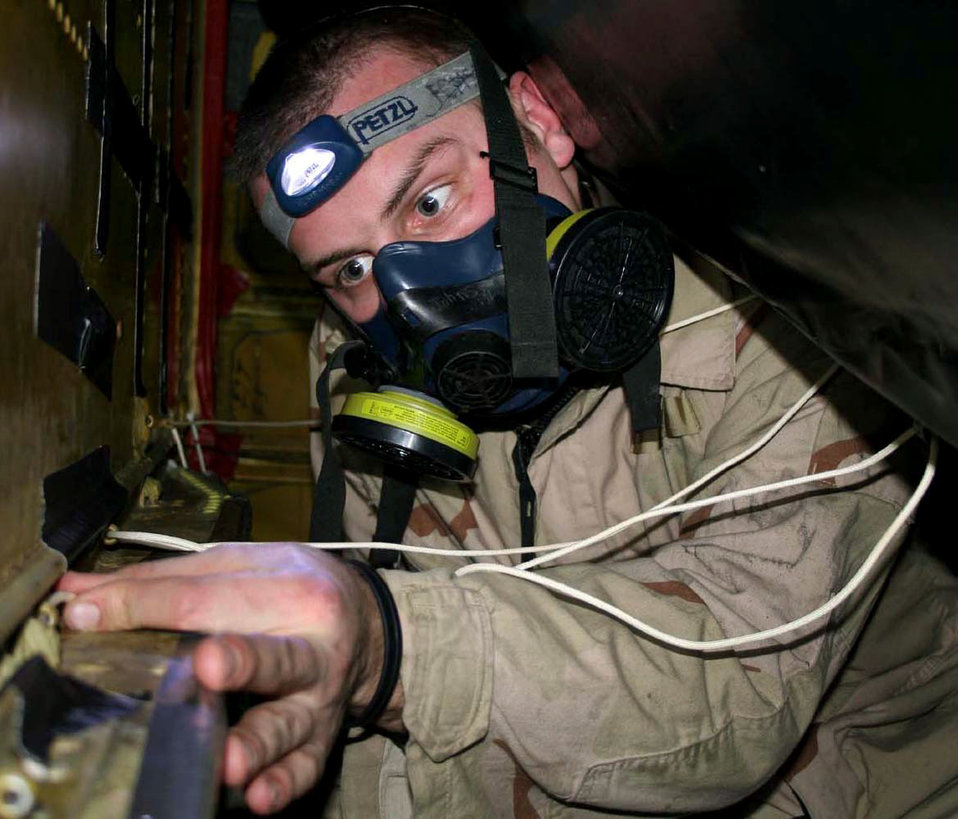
Stringing along

MANAS AIR BASE, Kyrgyzstan -- Airman 1st Class Michael Johns strings a lanyard securing a 1,000-gallon fuel bladder inside a KC-135 Stratotanker during a recent fuel cell repair here. Airman Johns is a fuel systems repair technician with the 376th Expeditionary Aircraft Maintenance Squadron.